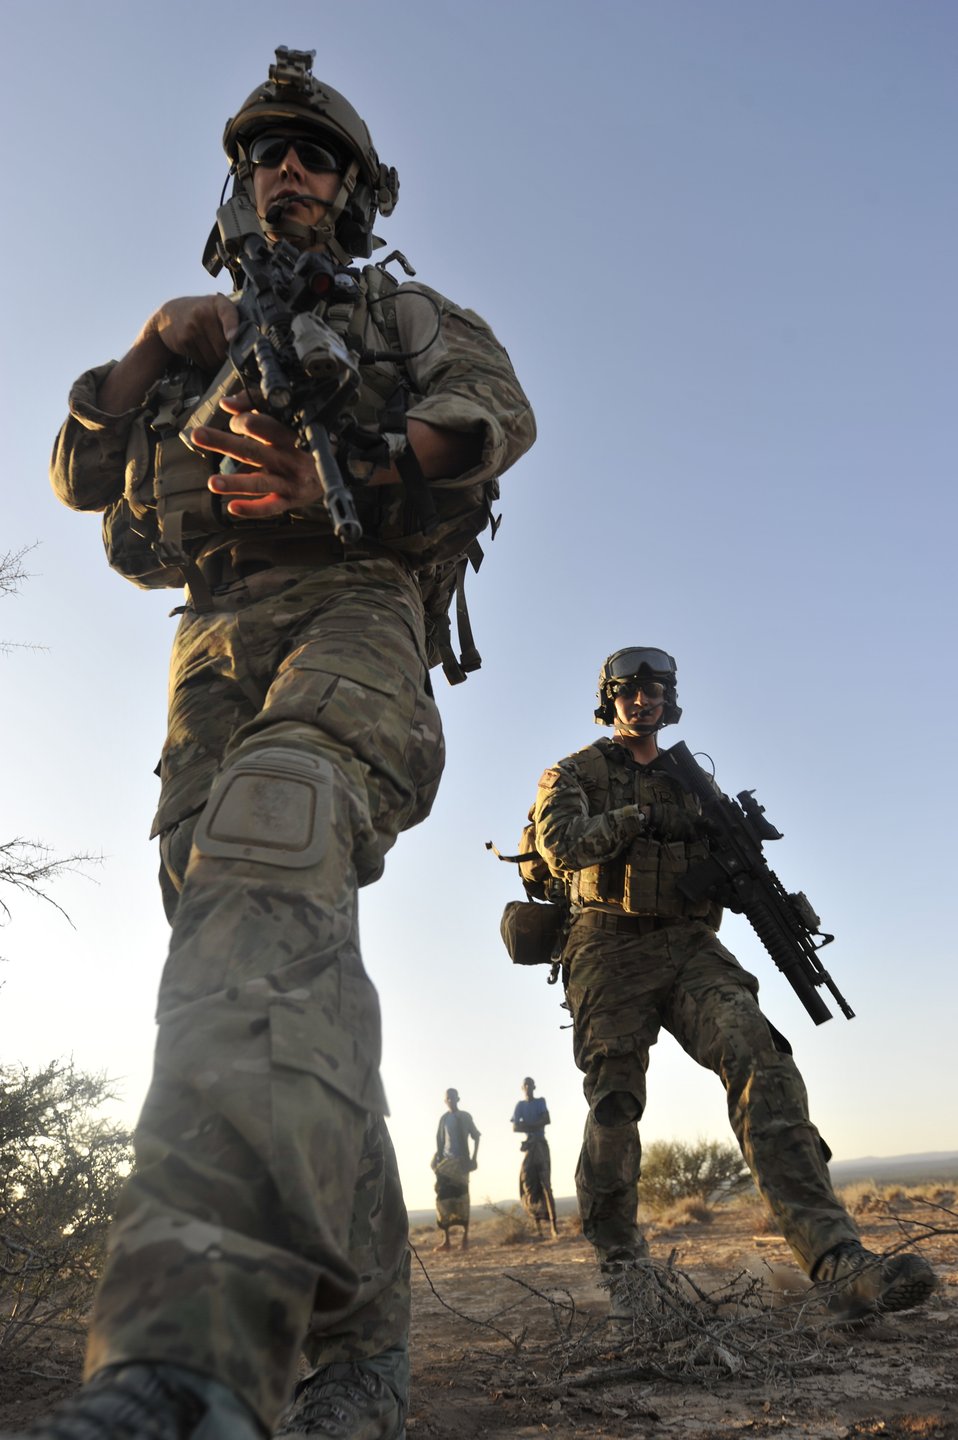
Heroes in training

Senior Airman Eric Humphrey (left) and Staff Sgt. Andrew Rios, both 82nd Expeditionary Rescue Squadron pararescuemen, arrive on scene to attend to simulated casualties at a mock crash site during a training mission in the Grand Bara Desert, Djibouti, Oct. 21, 2011. After parachuting into the drop zone, Rios' team had to locate casualties, provide care and evacuate them to safety as a part of the scenario.